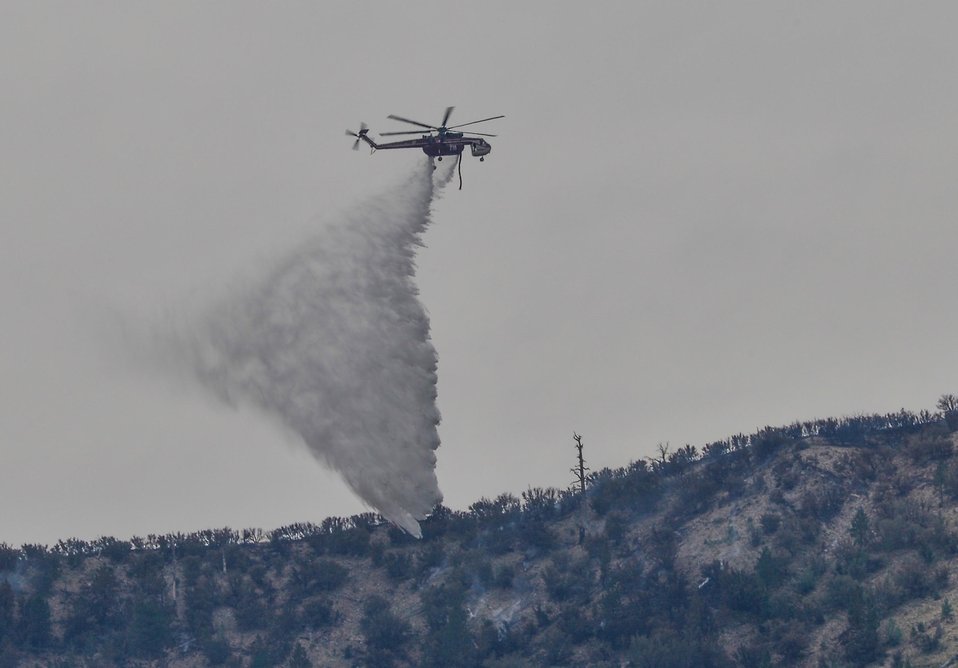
A fire helicopter dumps water in Kyle Canyon to suppress spread of Carpenter Fire. The Carpenter Fire in the Toiyabe National Forest near Humboldt, NV was caused by a lightning strike on Jul. 1, 2013. The fire has consumed nearly 27,881acres and is presently 70% contained.